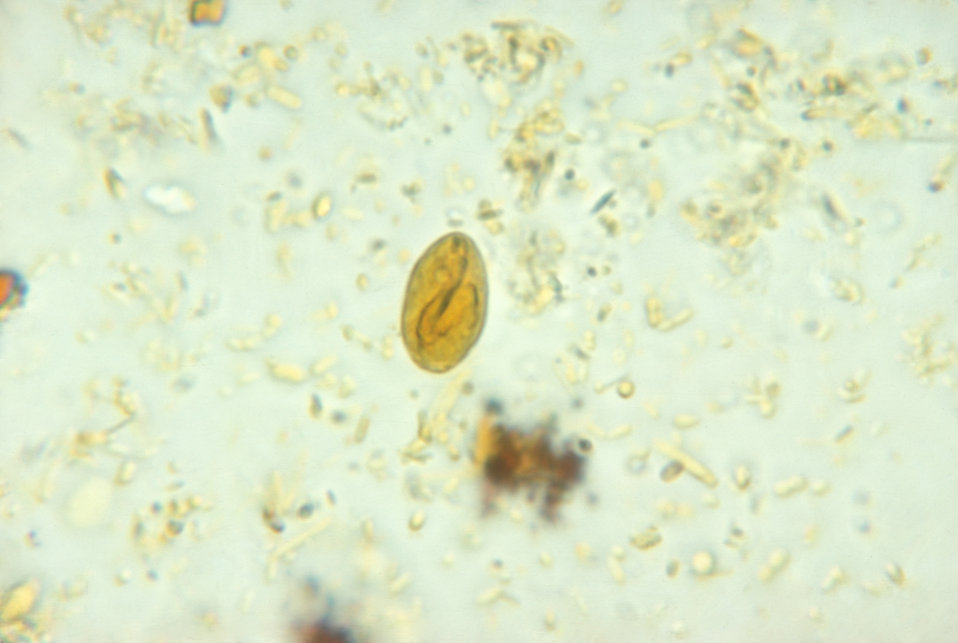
Giardia lamblia cyst. Iodine stain.